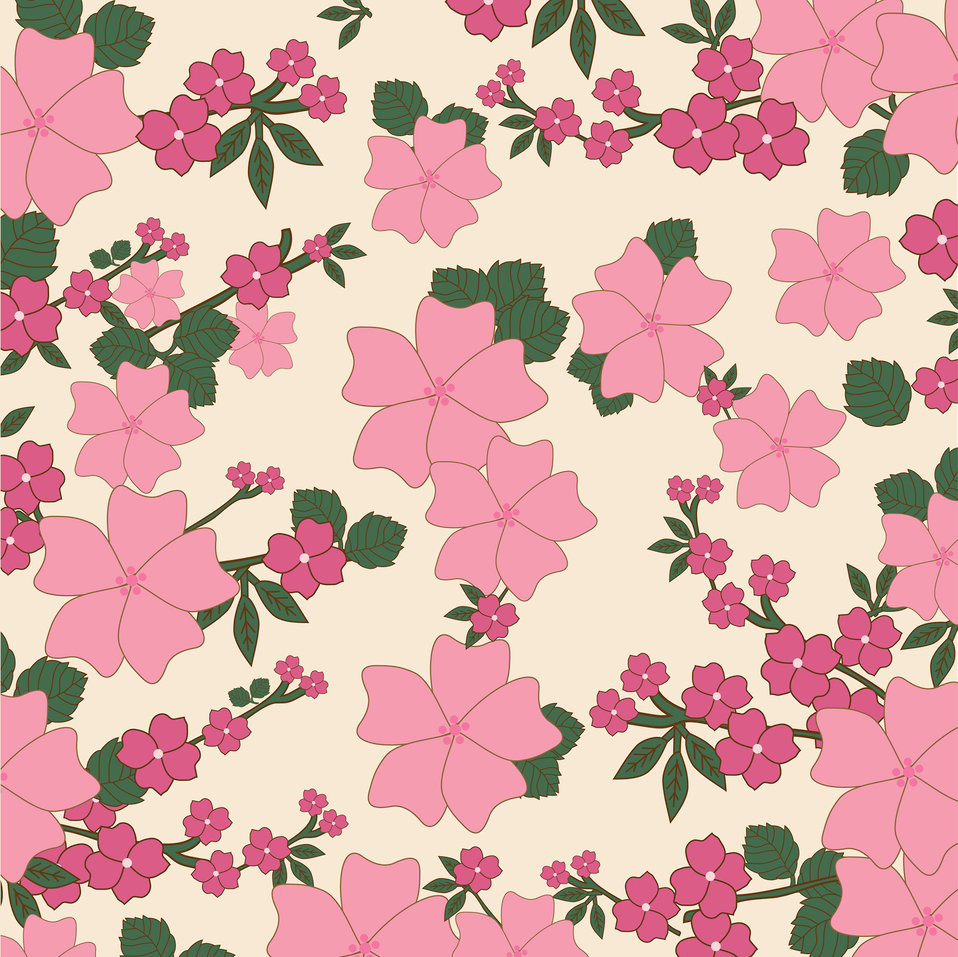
Vintage floral wallpaper background in shades of pink for scrapbooking.